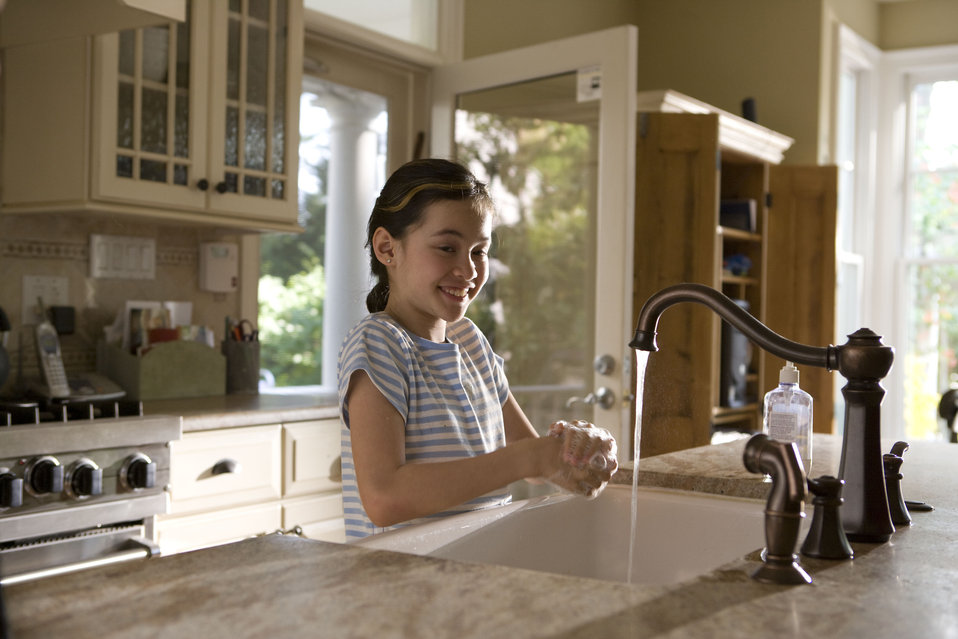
This young girl was shown in the process of properly washing her hands at her kitchen sink, briskly rubbing her soapy hands together under fresh running tap water, in order to remove germs, and contaminants, thereby, reducing the spread of pathogens, and her ingestion of environmental chemicals or toxins. Children are taught to recite the Happy Birthday song, during hand washing, allotting enough time to completely clean their hands.